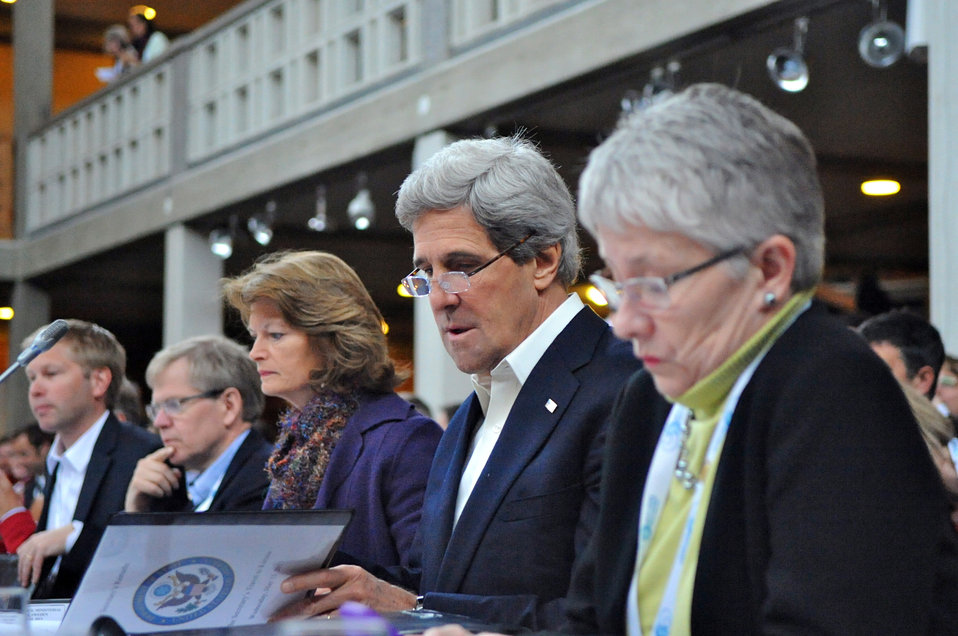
Secretary Kerry Attends the Arctic Council Ministerial Session

U.S. Senator Lisa Murkowski of Alaska, seated on the Secretary's left, U.S. Secretary of State John Kerry, and U.S. Assistant Secretary of State for Oceans and International Environmental and Scientific Affairs Kerri-Ann Jones, seated on the Secretary's right, prepare for the Kiruna Ministerial Meeting of the eighth annual Arctic Council meeting at the City Hall in Kiruna, Sweden, on May 15, 2013.